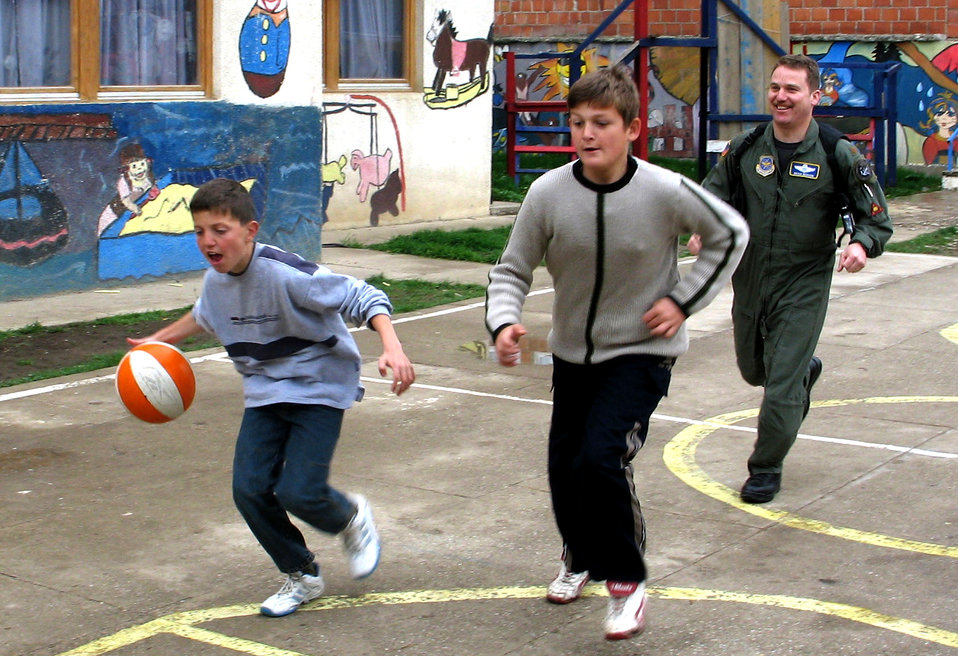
Kosovo children relish playtime with American troops

PRISTINA, Serbia and Montenegro -- Maj. Brian Benson plays basketball with children during a recent visit to the Pristina Mother and Child Center here. He is assigned to Kosovo Force headquarters at NATO Base Film City.